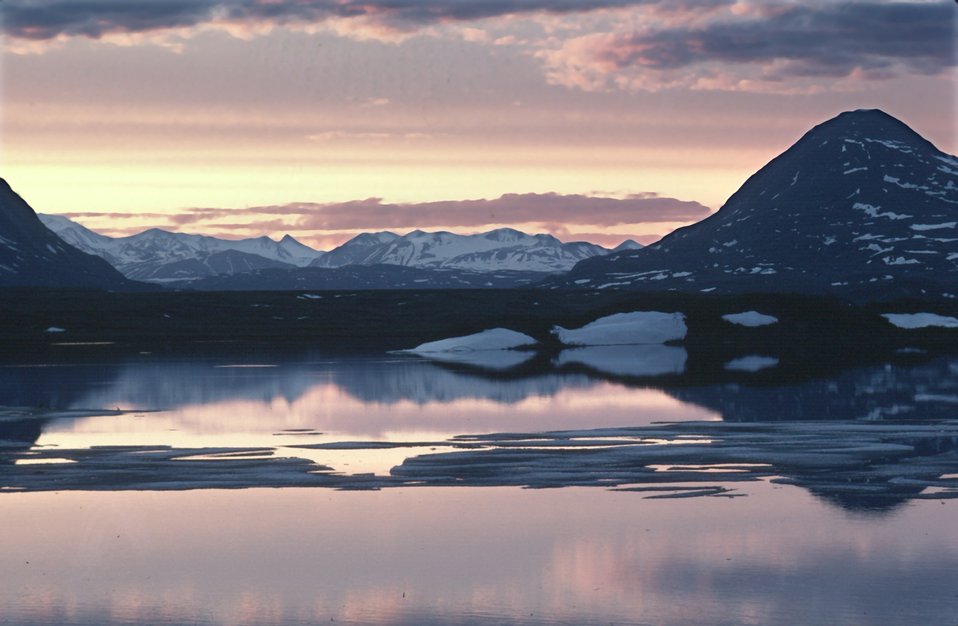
Sunset and icebergs, Tangle Lakes, Denali Highway, Alaska